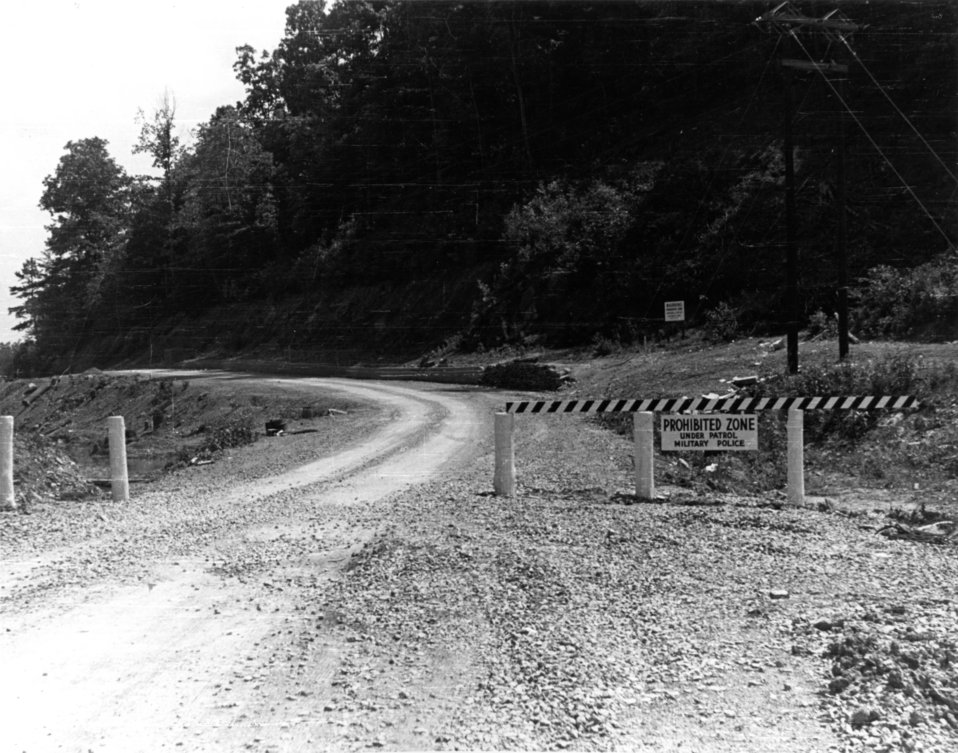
Security at Oak Ridge